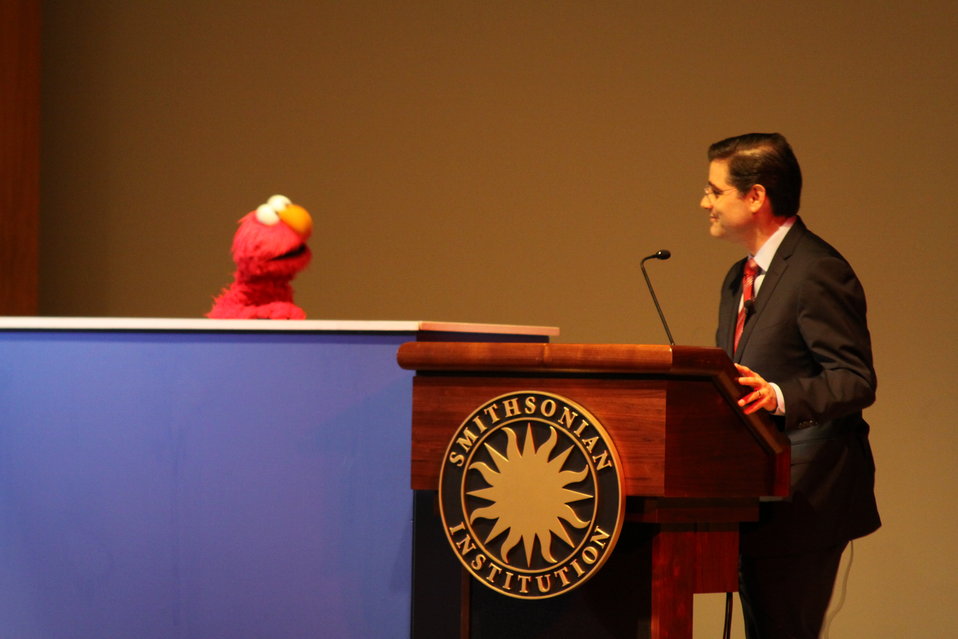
March 12, 2010- Smithsonian Broadband with Elmo